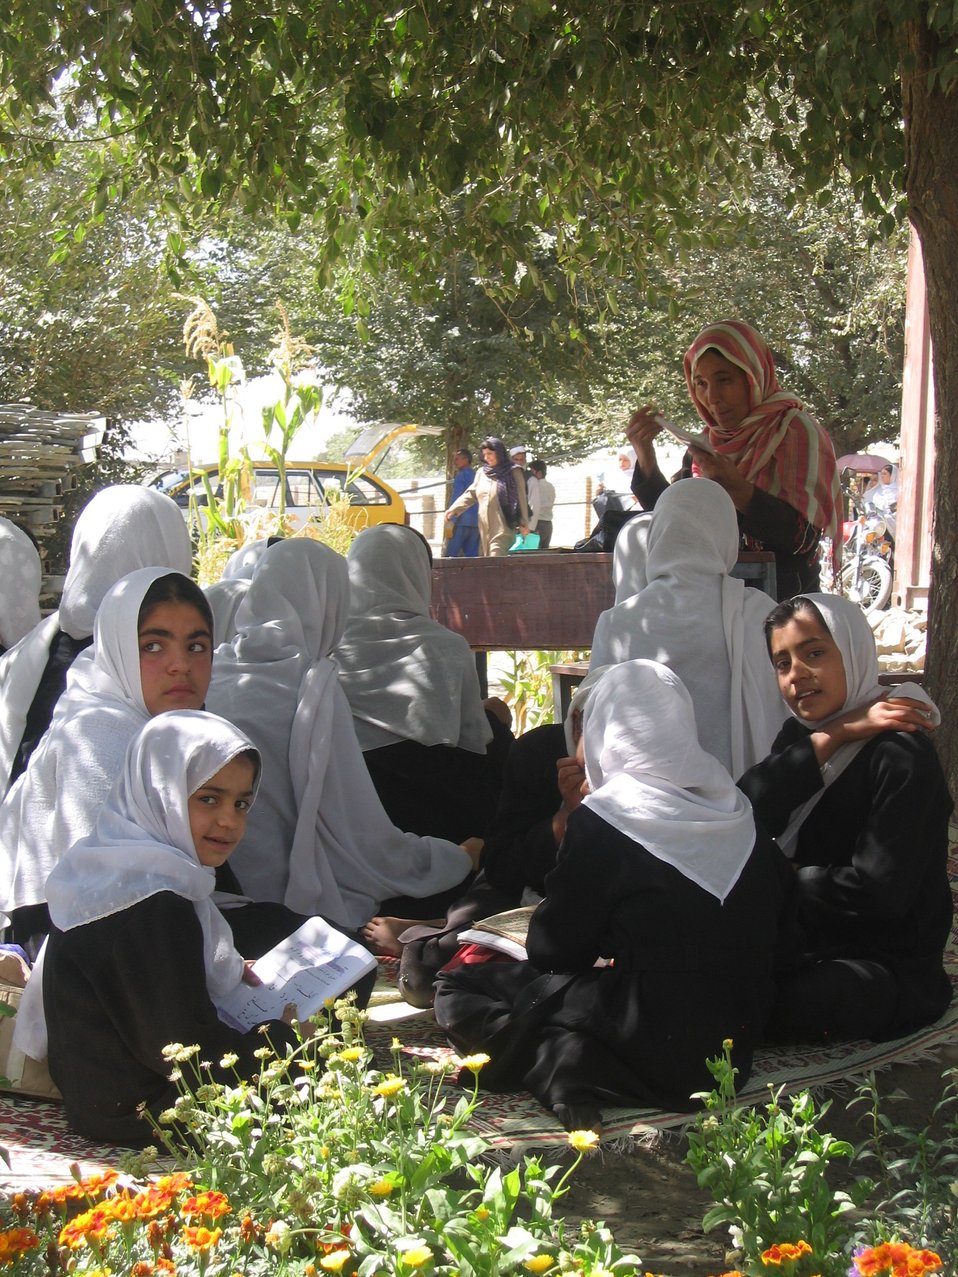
Kabul Sardar Kabuli Girls School